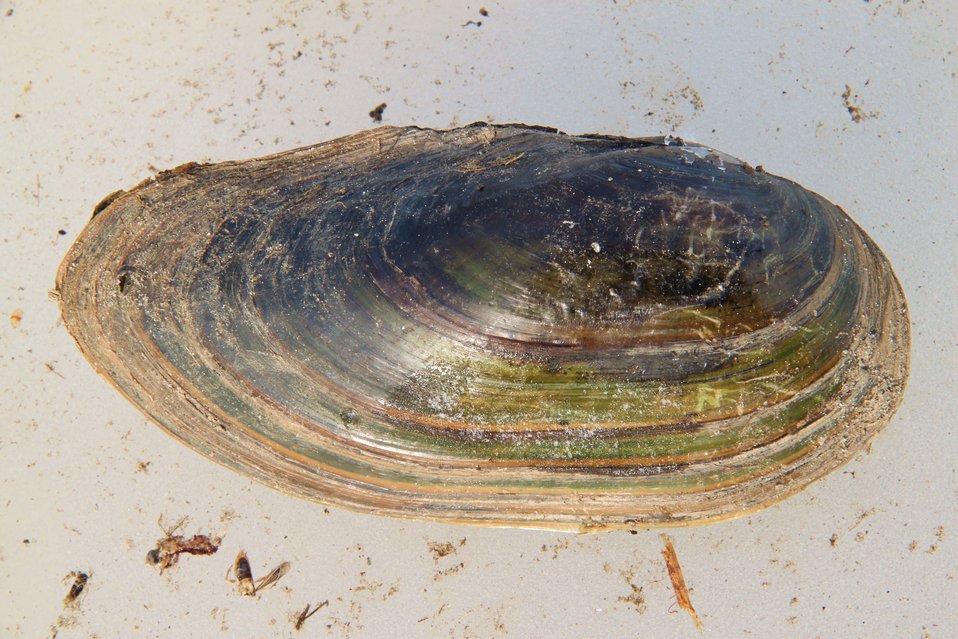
Eastern floater

A native mussel on Missisquoi National Wildlife Refuge; this one was on the ice piled up from an otter foraging around a water control structure.